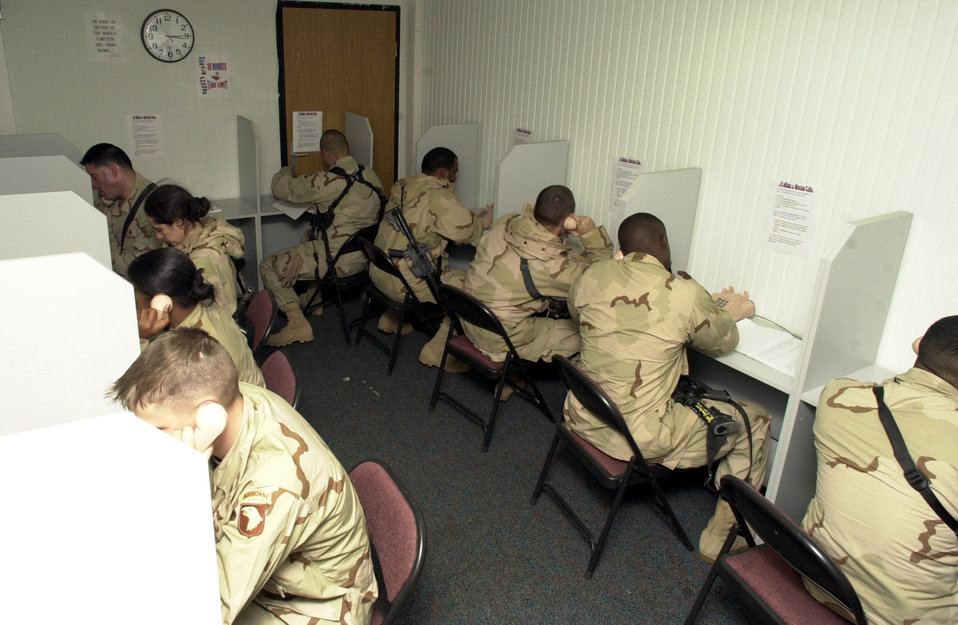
Phone home

INCIRLIK AIR BASE, Turkey -- U.S. soldiers place morale calls in a terminal specially equipped to make wait for departing aircraft more tolerable. Thousands of soldiers are transiting through the base during a large-scale Army troop changeover in Southwest.